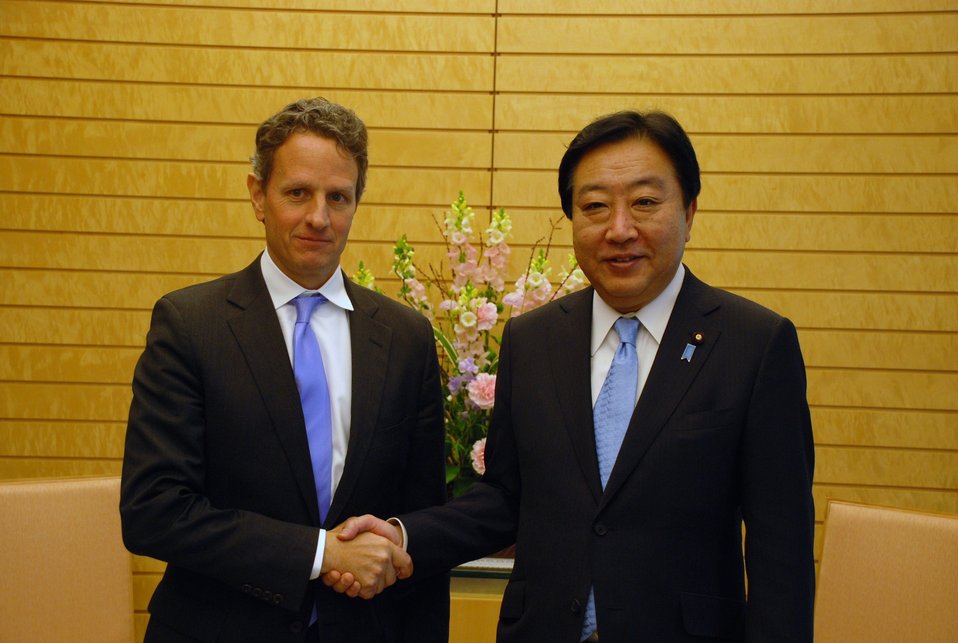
Secretary Geithner in Japan

On Thursday, January 12, 2012, Treasury Secretary Tim Geithner met with Japanese Prime Minister Yoshihiko Noda.